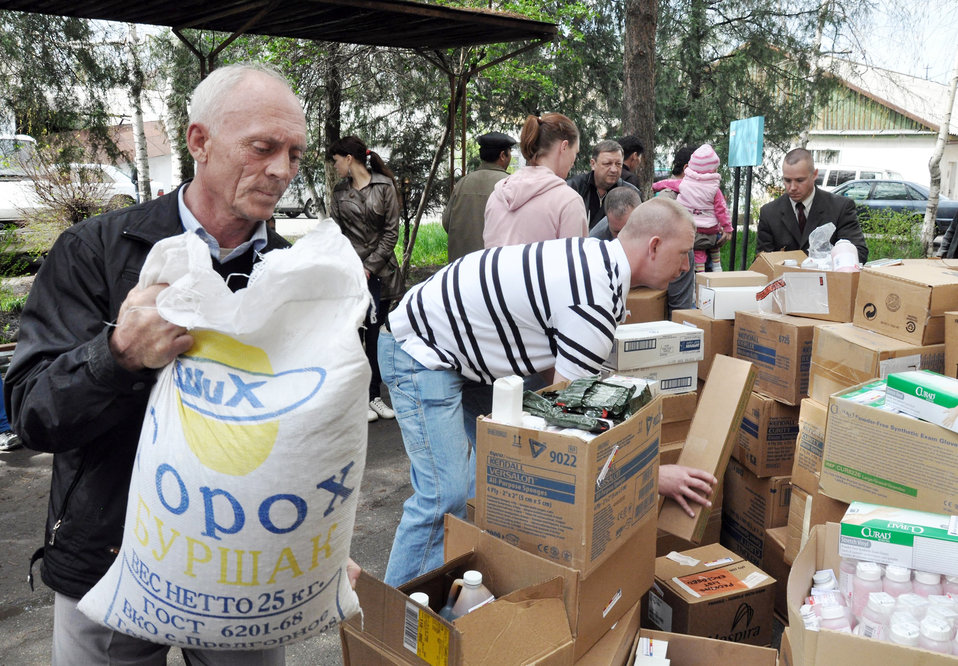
Airmen continue distributing medical supplies to Bishkek

A Kyrgyz man helps Airmen from the Transit Center at Manas carry donated food and medical supplies April 15, 2010, for the National Hospital in Bishkek, Kyrgyzstan.